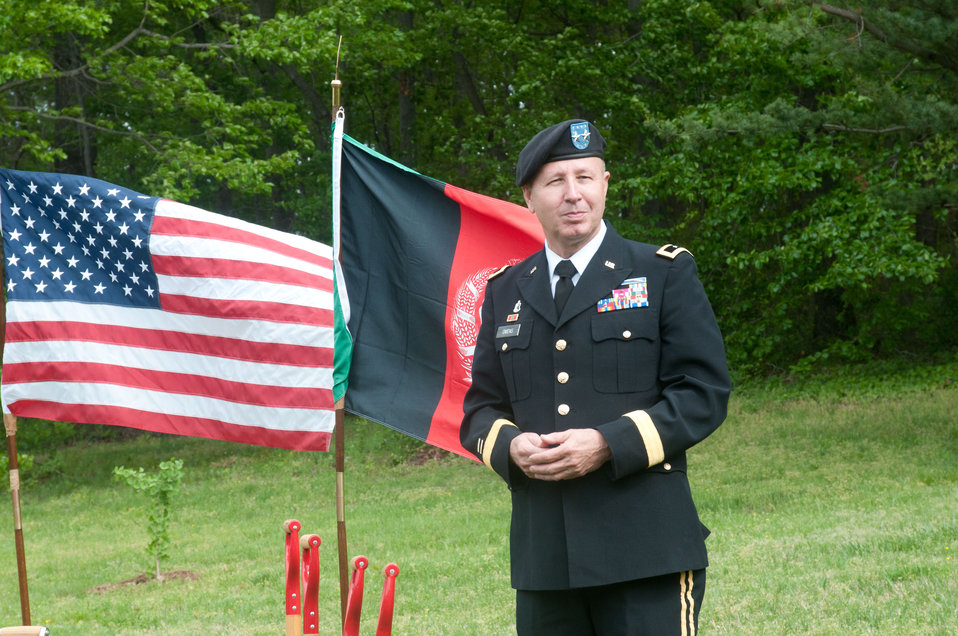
Special Assistant to the Director, Army National Guard Major General Darren Owens spoke at the Arbor Day tree planting of a Cedrus deodara ('Karl Fuchs') at the U.S. National Arboretum, Washington, DC, on Friday, April 29, 2011. The tree is originally from Pakta Province and the most important tree in Afghanistan for timber.